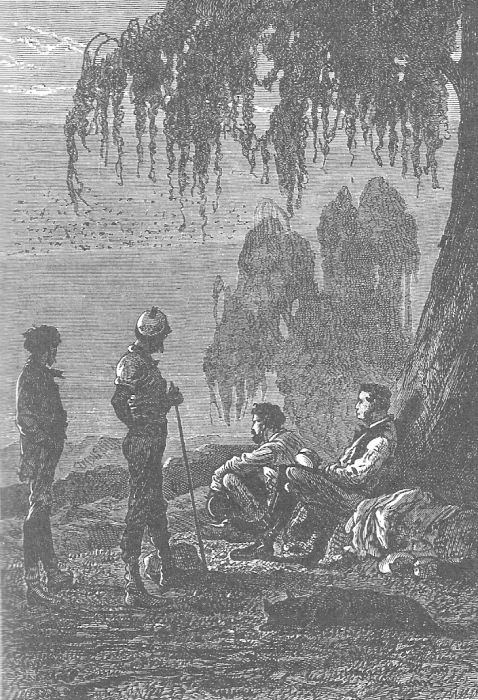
An illustration from Jules Verne's novel 'The Adventures of Three Englishmen and Three Russians in South Africa' (1870) drawn by Jules Férat. Polski: Ilustracja powieści Juliusza Verne'a 'Przygody trzech Rosjan i trzech Anglików w południowej Afryce' (1870) autorstwa Julesa Férata. Français : Jules Verne: 'Aventures de trois russes et de trois anglais dans l’Afrique australe' (1870), dessins par Jules Férat.